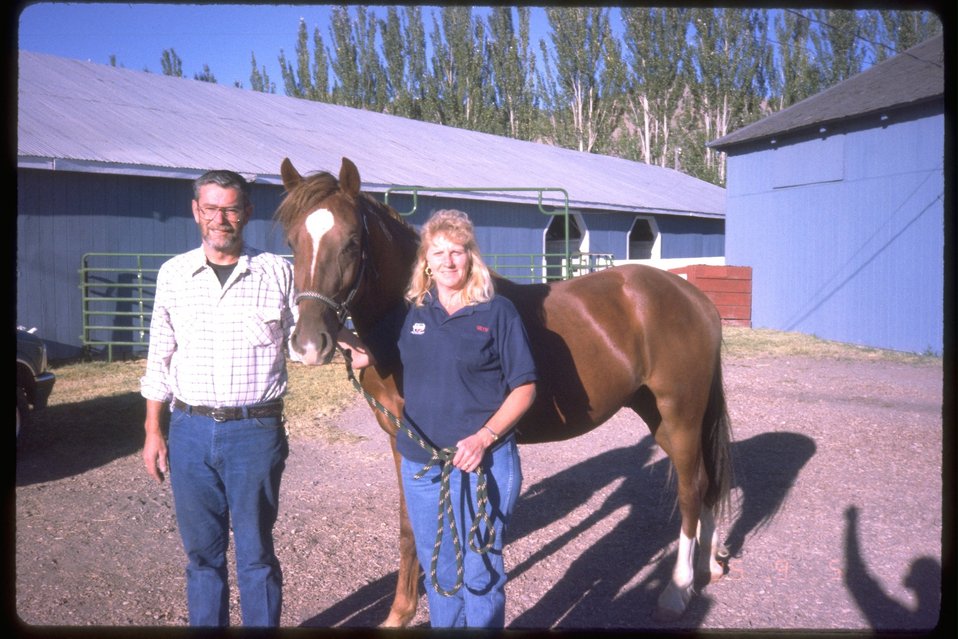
Wild horse and burro adoption.